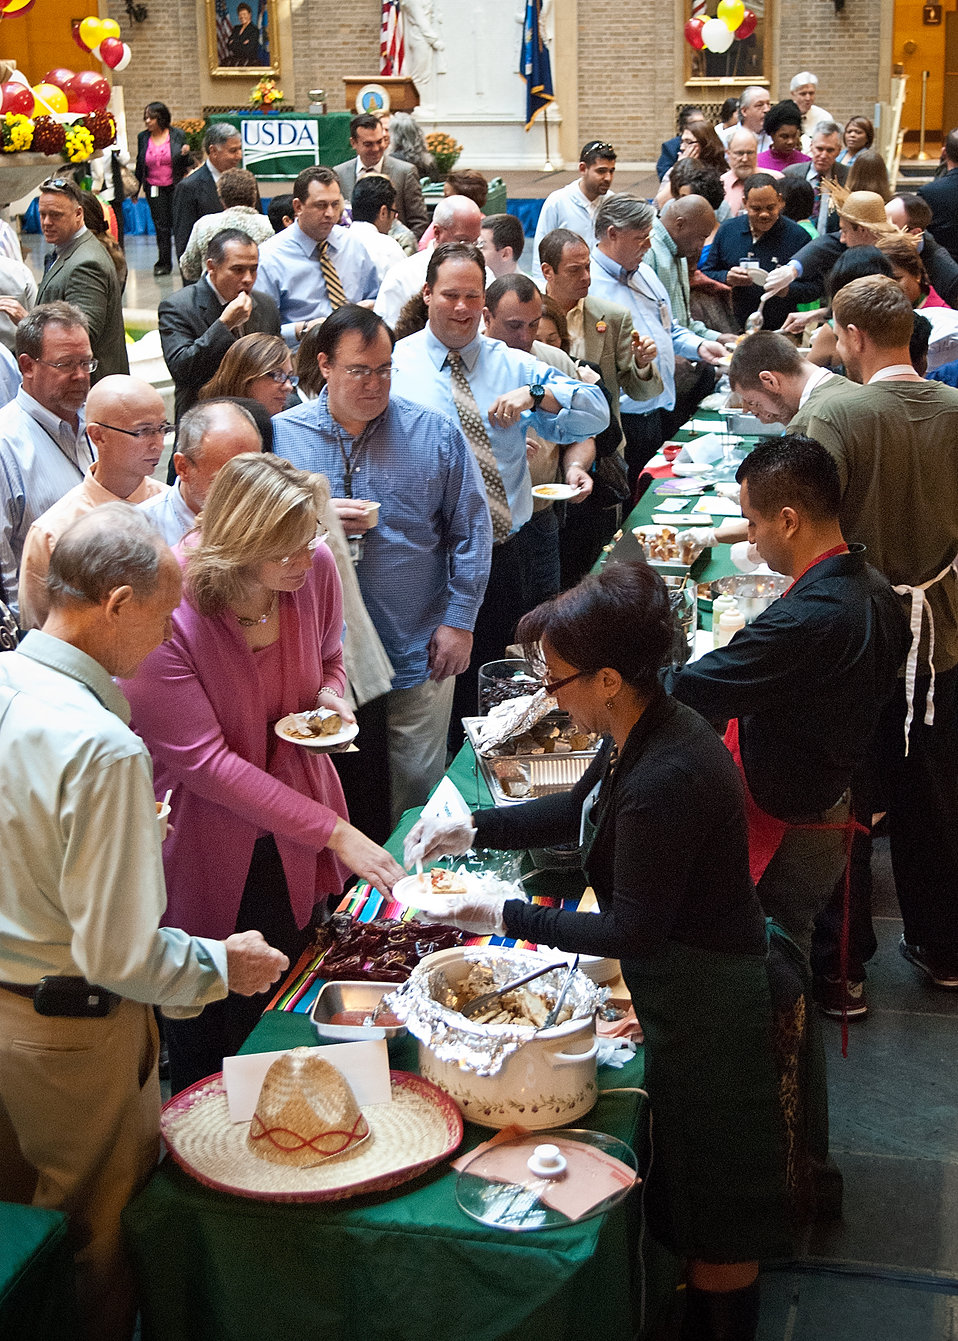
Sinceri Guerrero, Food Safety Inspection Service serves tamales to U. S. Department of Agriculture employees during the Second Annual Chili Challenge Contest to celebrate Hispanic Heritage Month at USDA in Washington, DC, on Thursday, October 6, 2011. Guerrero one of the employee chef volunteers along with Celebrity chefs and other USDA employee chef volunteers used chili’s in delicious recipes to celebrate Hispanic cuisine. USDA’s traditional Chili Challenge trophy will be awarded to this year’s best-tasting chili. The judges for the challenge will be Chefs Toni Tipton-Martin, Chef Pedro Matamoros from 8407 Kitchen Bar, Corporate Executive Chef Lance Lemin, Ed Avalos, Undersecretary, Marketing and Regulatory Programs and Krista Hardin, Chief of Staff.